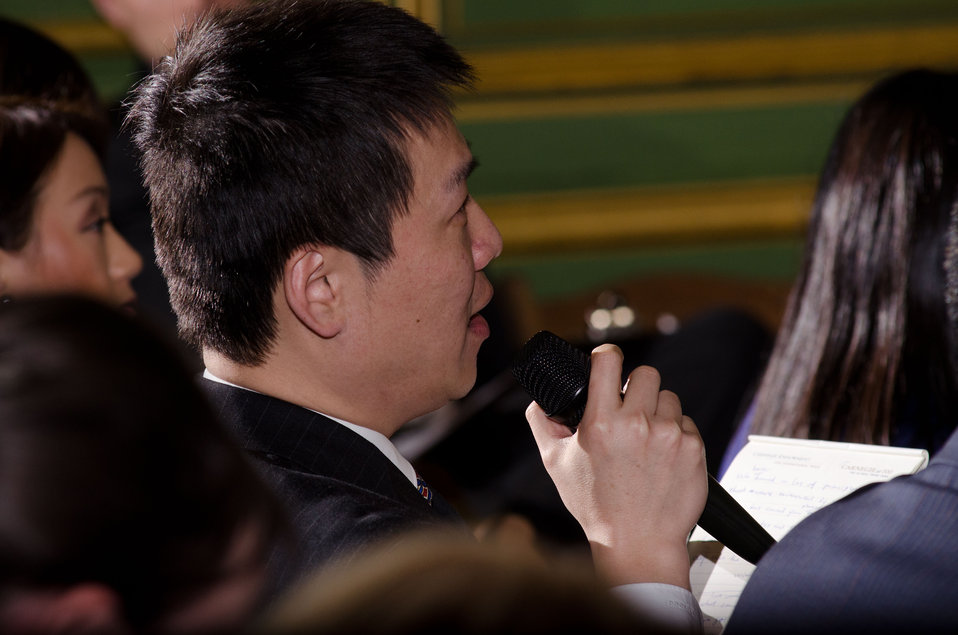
A China News Agency reporter presents a question to U.S. Trade Representative Ron Kirk, and Acting U. S. Commerce Secretary Rebecca Blank (not seen) during a press conference with international news media, in the 23rd Session of the U.S. China Joint Commission on Commerce and Trade (JCCT) at the Andrew W. Mellon Auditorium in Washington, D.C. on Wednesday, Dec. 19, 2012. The JCCT holds high-level plenary meetings on an annual basis to review progress made by working groups that focus on a wide variety of trade issues. These working groups meet throughout the year to address topics such as intellectual property rights, agriculture, pharmaceuticals and medical devices, information technology, tourism, commercial law, environment, and statistics.